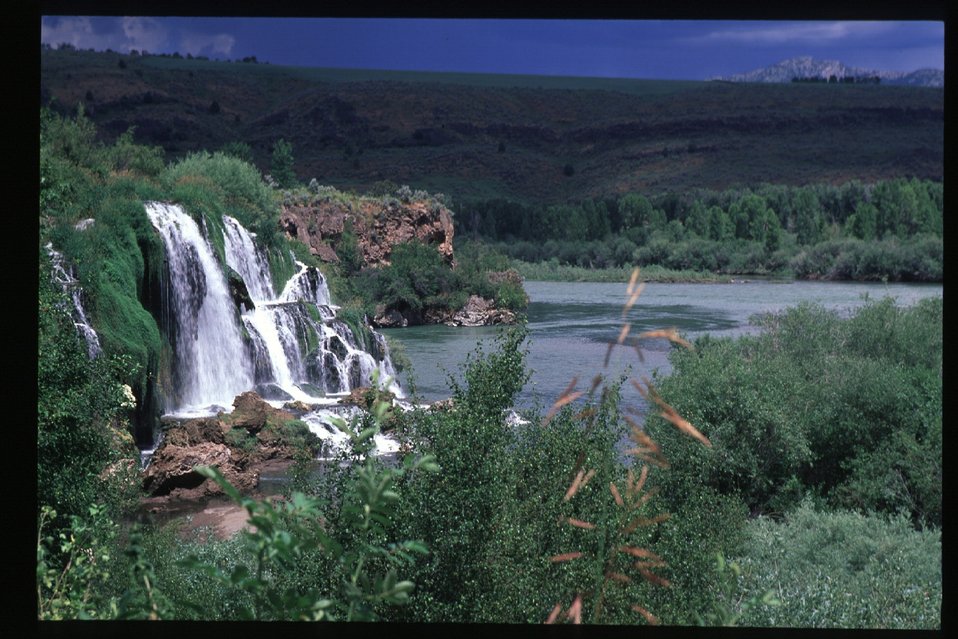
Scenic waterfall Fall Creek Falls Snake River Canyon USRD Upper Snake River District